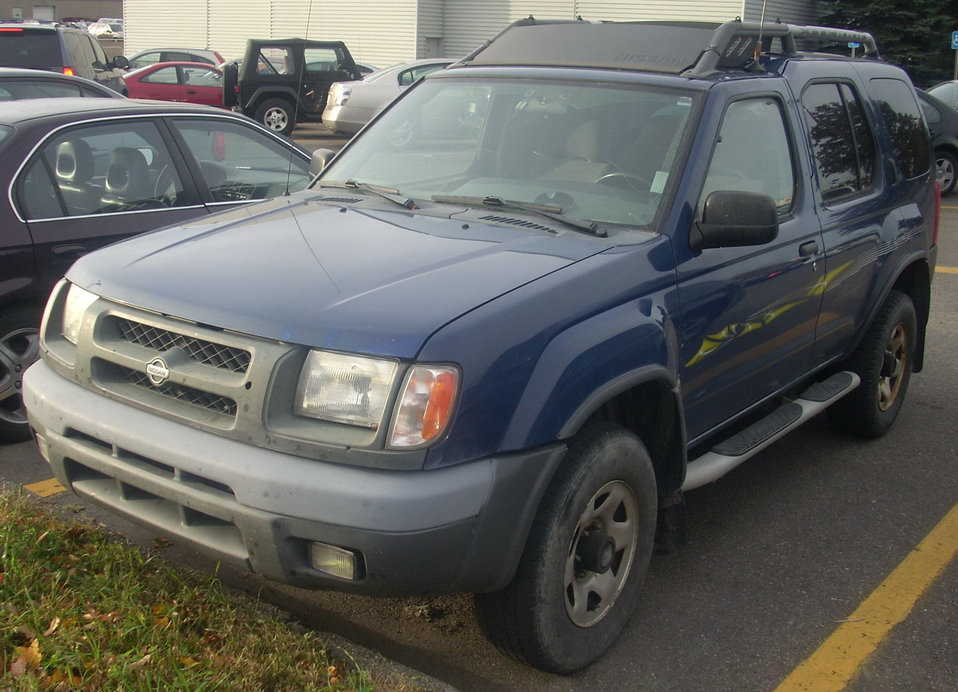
2000-2001 Nissan Xterra photographed in Montreal, Quebec, Canada.